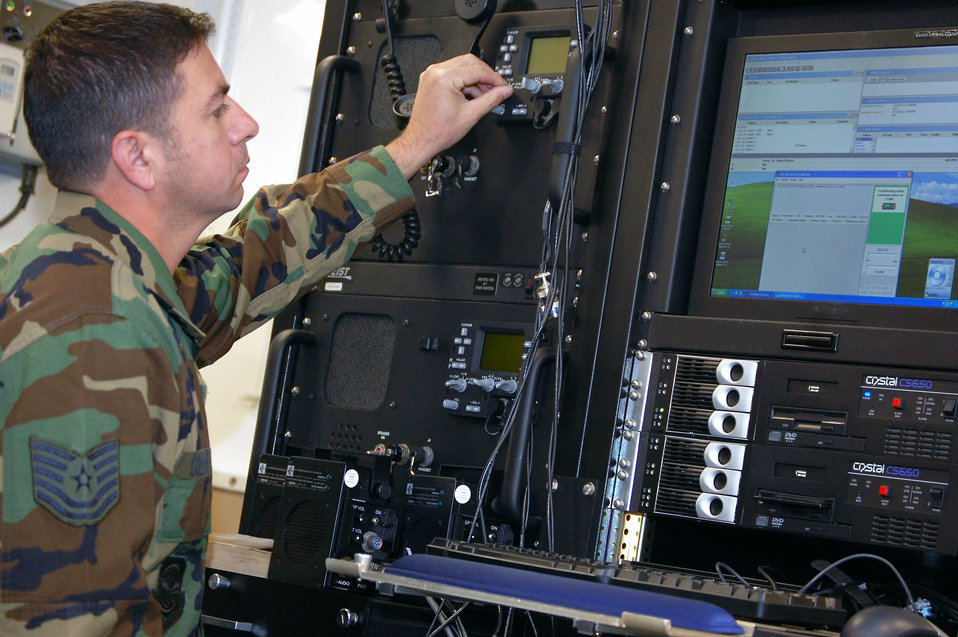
Air Force's newest mobile air shelter set up for Expeditionary Center training

Tech. Sgt. Don Colbert works on radio equipment inside the Hard-sided Expandable Lightweight Air Mobile Shelter, or HELAMS, in the Mobility Operations School's Mobile C3 training facility at Fort Dix, N.J., Oct. 29. The HELAMS is the Air Force's newest shelter being fielded to contingency response forces to serve as mobile command posts in a bare-base environment. Sergeant Colbert is a course director for the U.S. Air Force Expeditionary Center's Mobile Command, Control and Communications Systems Course.